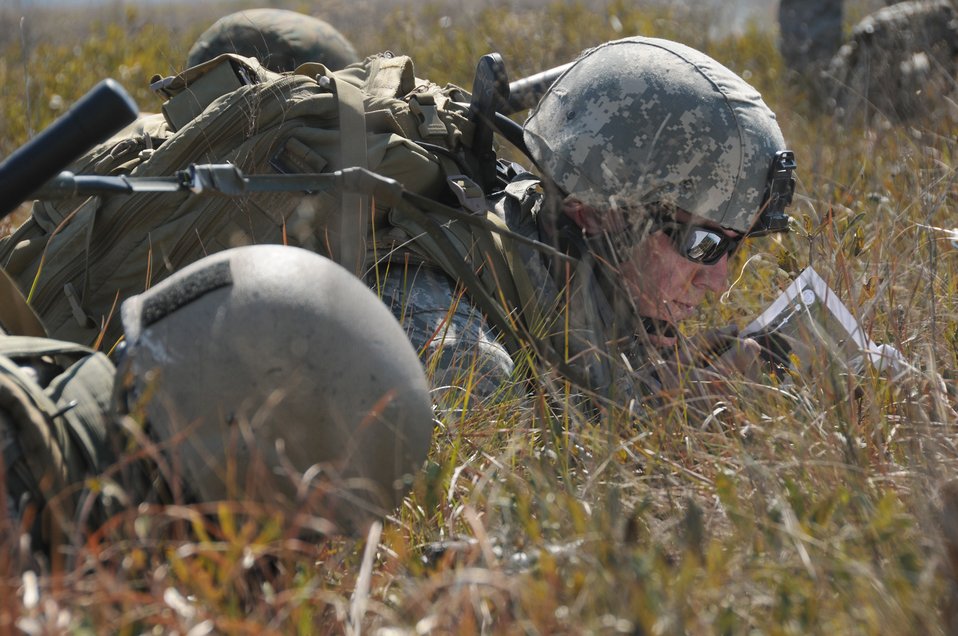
Atlantic Strike

Staff Sgt. Cody McNorton finds his location on a map Feb. 15, 2011, during exercise Atlantic Strike at Avon Park Air Force Range, Fla. Atlantic Strike is a coalition air-to-ground training exercise that simulates a deployed environment. Sergeant McNorton is assigned to the 14th Air Support Operations Squadron.